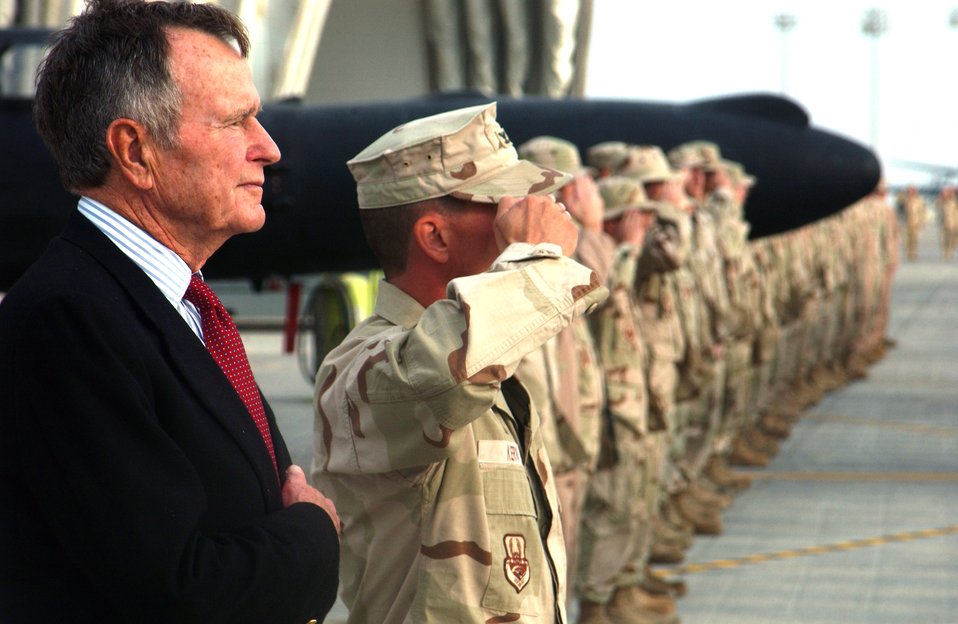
Former president visits Airmen

Former President George H.W. Bush listens to the national anthem with Airmen from the 380th Air Expeditionary Wing Nov. 20 in Southwest Asia. President Bush stopped by the wing to receive a mission briefing and meet the Airmen assigned here.